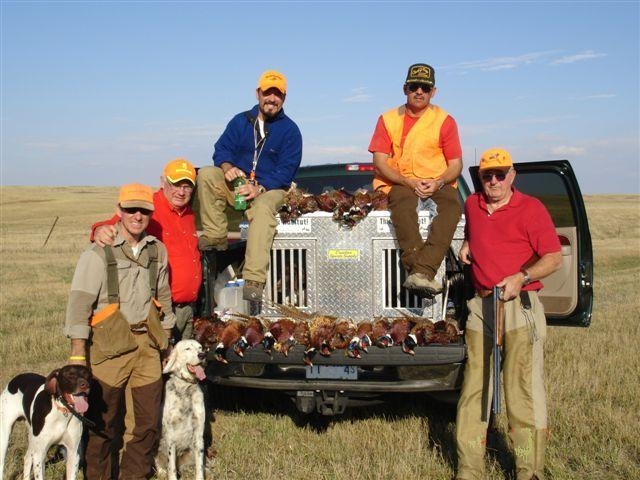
Hunters in South Dakota

Hunters take advantage of walk-in hunting. Kansas, South Dakota, North Dakota, Montana and Nebraska are continuously working to provide hunter access on private lands. States spent a combined $9 million of Wildlife Restoration funds to provide hunting access on 5.7 million acres of private land.